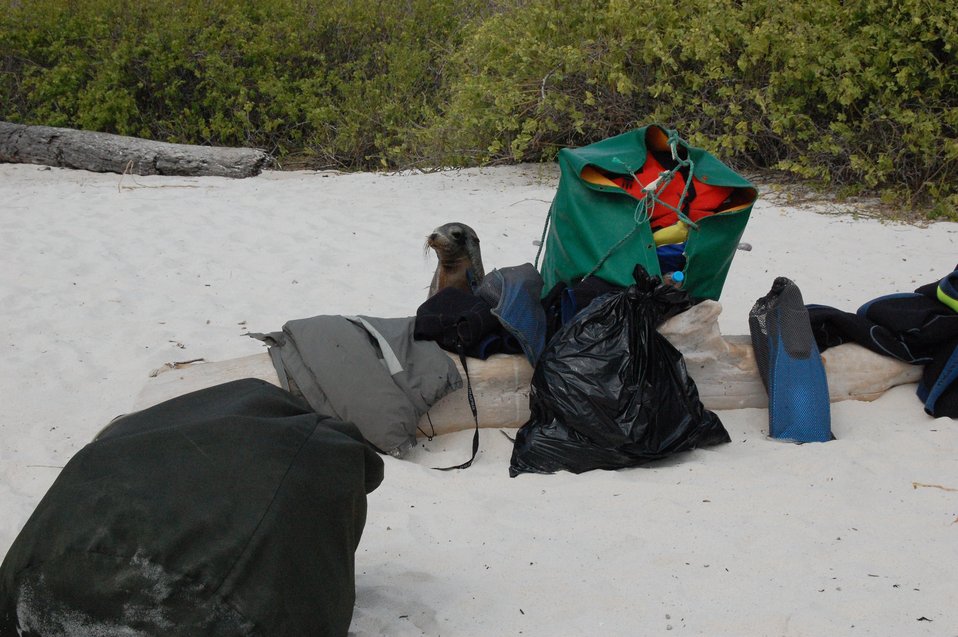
Sea lion wondering what humans bring to the beach with them.